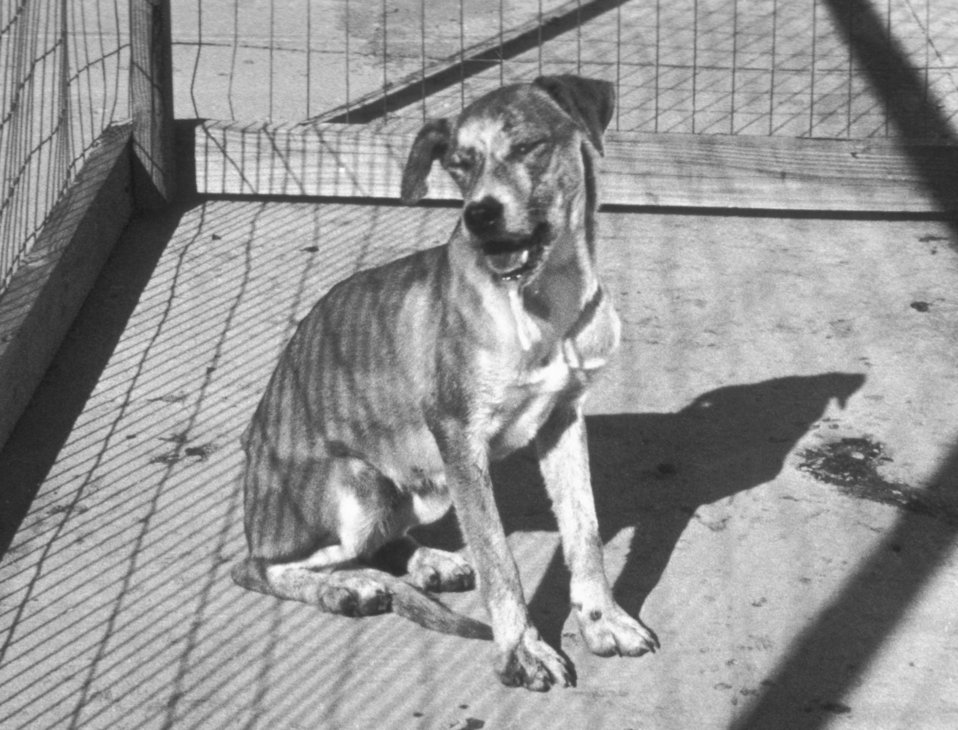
This rabid dog has saliva dripping from the mouth, which is a primary indicator for the presence of this disease.